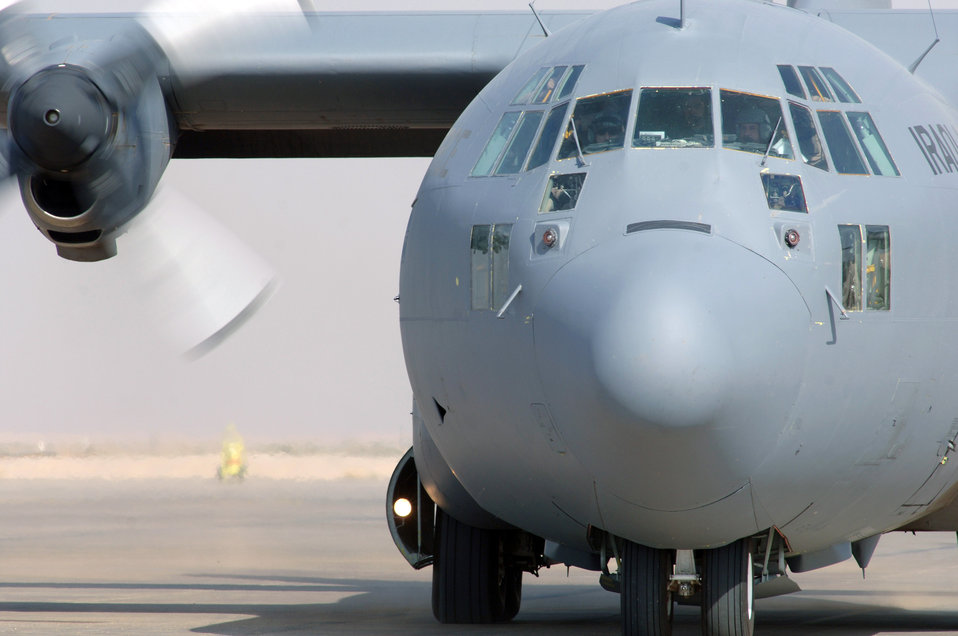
Inside the beast

ALI BASE, Iraq -- An Iraqi air force C-130 Hercules taxis down the ramp before takeoff. The base is the U.S. Air Force's only major airfield in southern Iraq.